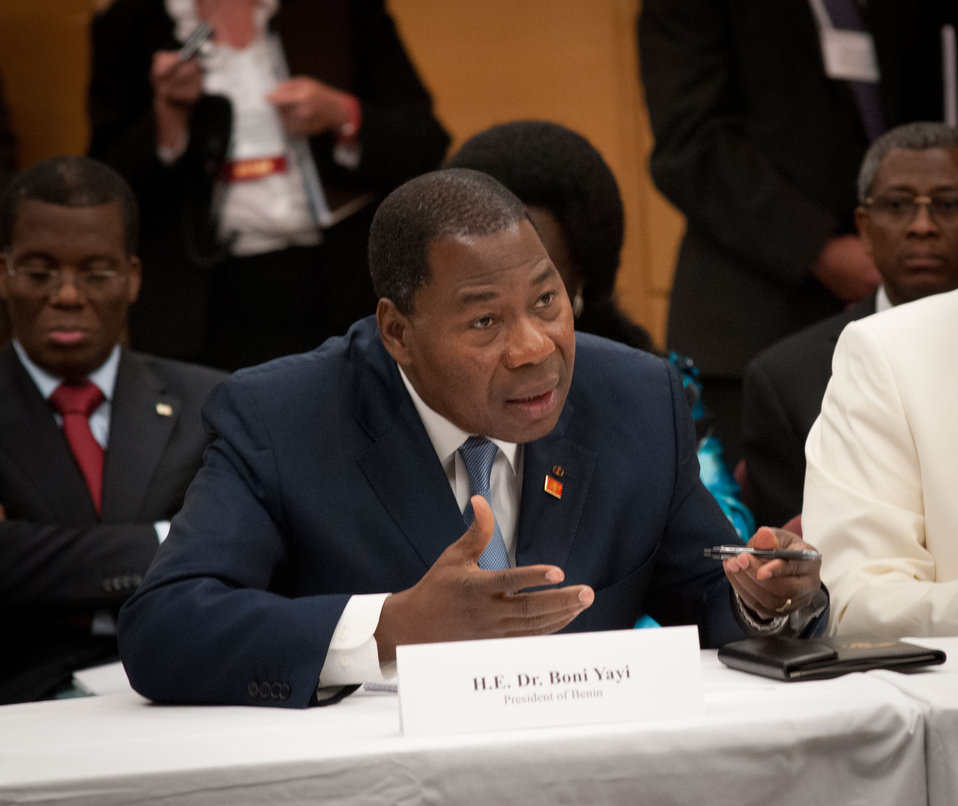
President of Benin His Excellency Dr. Boni Yayi makes remarks at the meeting of African Heads of State conference at the Ronald Reagan Federal Building in Washington, D.C., on Friday, May 18, 2012.